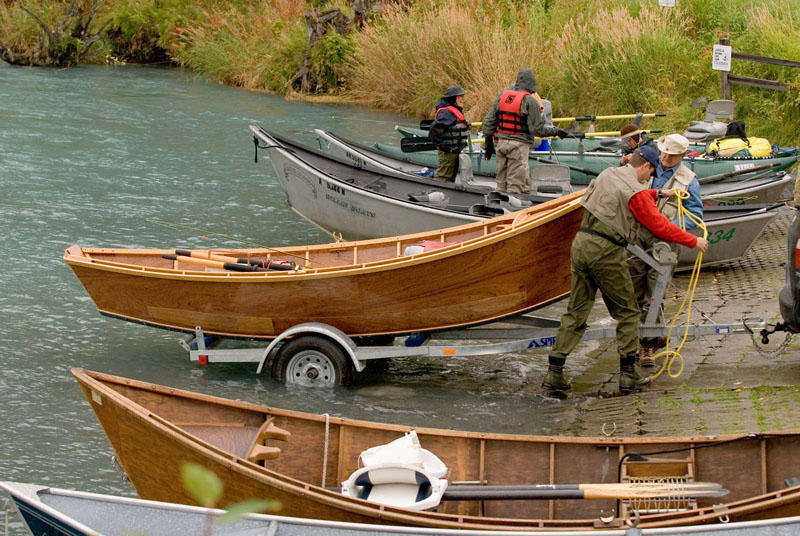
Launching drift boats on Kenai River, AK during the salmon run. 2006 USEPA Photo by Eric Vance